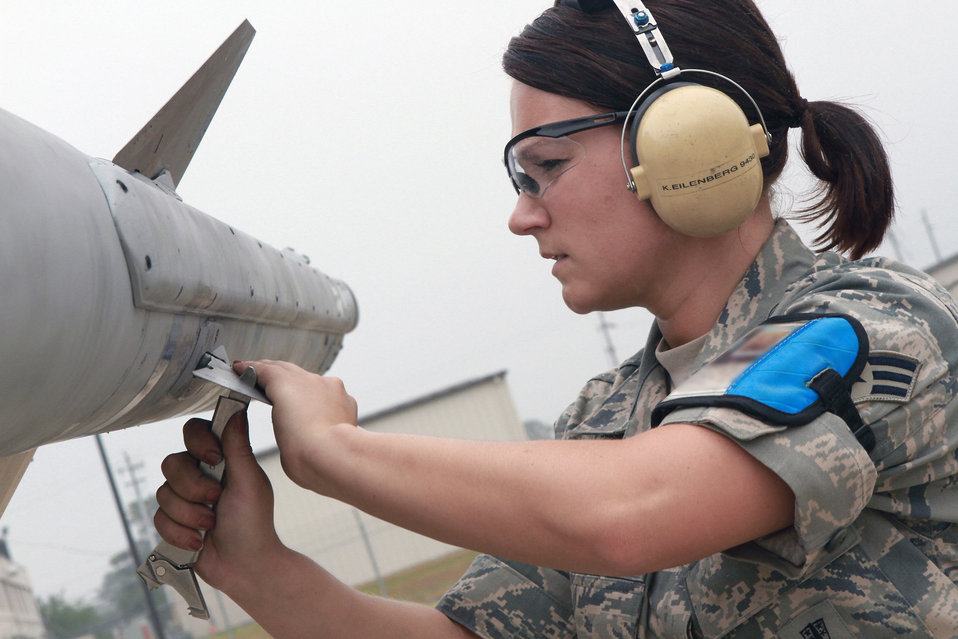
Weapons-loader competition

Senior Airman Kelly Eilenberg installs a fin on an advanced medium-range air-to-air missile June 12, 2011, during an annual load-crew competition at Egg Harbor Township, N.J. Airman Eilenberg is a weapons loader assigned to the New Jersey Air National Guard's 177th Fighter Wing.